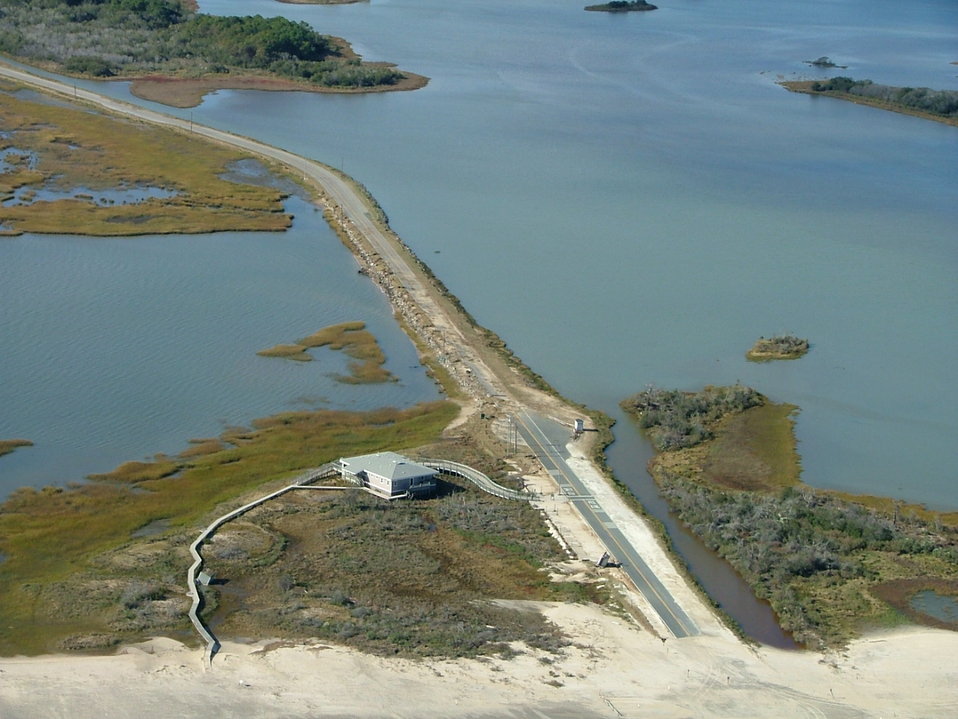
Chincoteague National Wildlife Refuge (VA), beach road damage

The road to the beach was severely damaged during the storm.